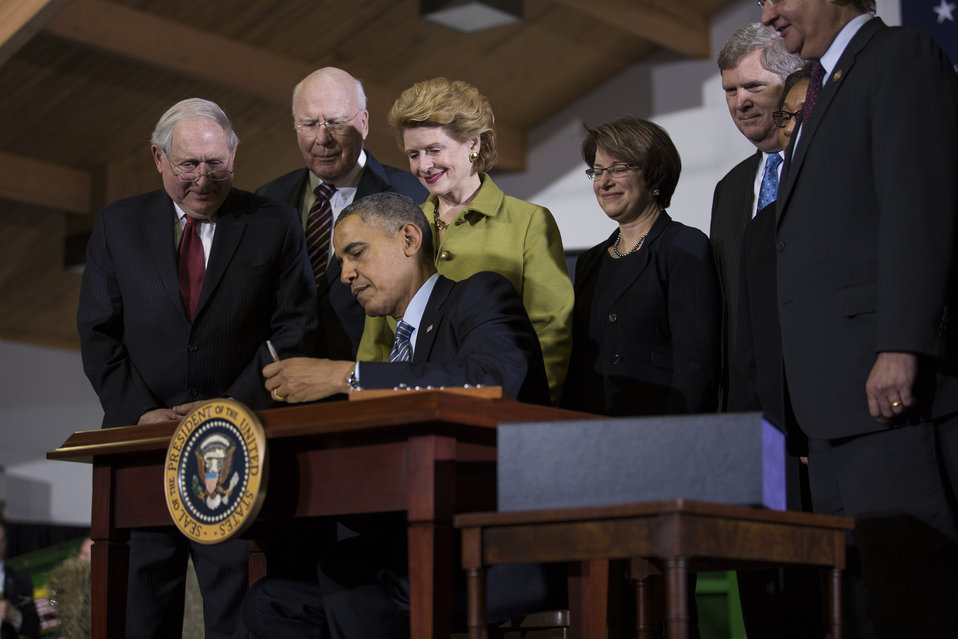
President Barack Obama signs the Agricultural Act of 2014 at Michigan State University in East Lansing, MI on Friday, Feb. 7, 2014. The President spoke on the importance of the act to America’s economy, detailing the progress over the last five years and how this bill will build on that progress. (L to R Senator Carl Levin (MI), Senator Patrick J. Leahy (VT), Senator Debbie Stabenow (MI), President Barack Obama, Senator Amy Klobucher (MN), Agriculture Secretary Tom Vilsack, Congresswoman Marcia L. Fudge (OH), Congressman Gary Peters (MI), and Daniel Kildee (MI)).